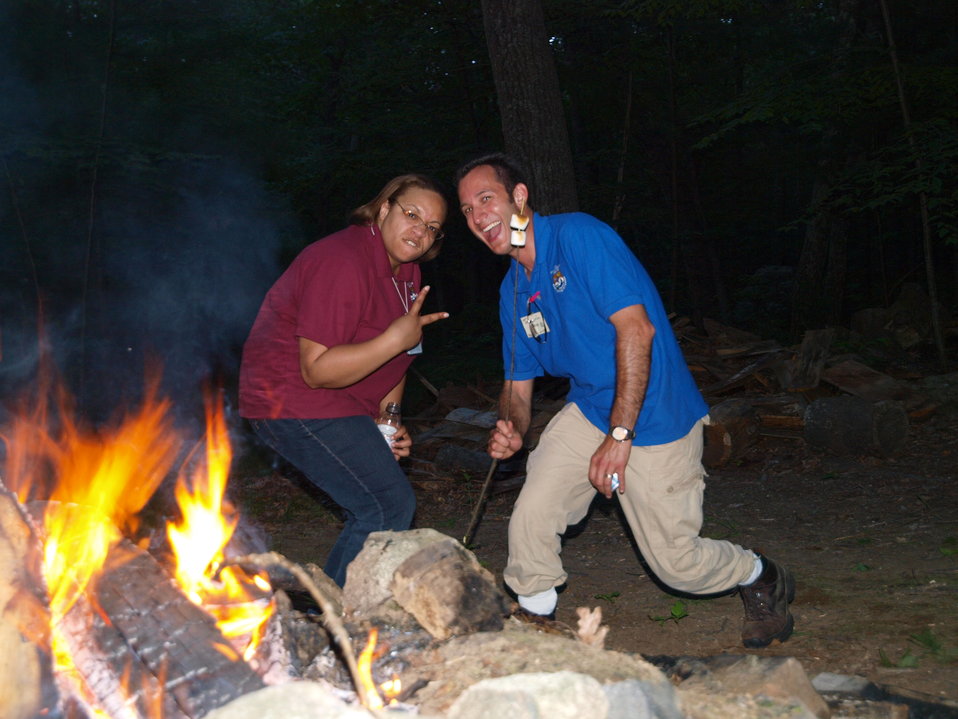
Keepin' it real with Daffney and Juancarlos

Mentors Daffney and Juancarlos having fun by the fire.